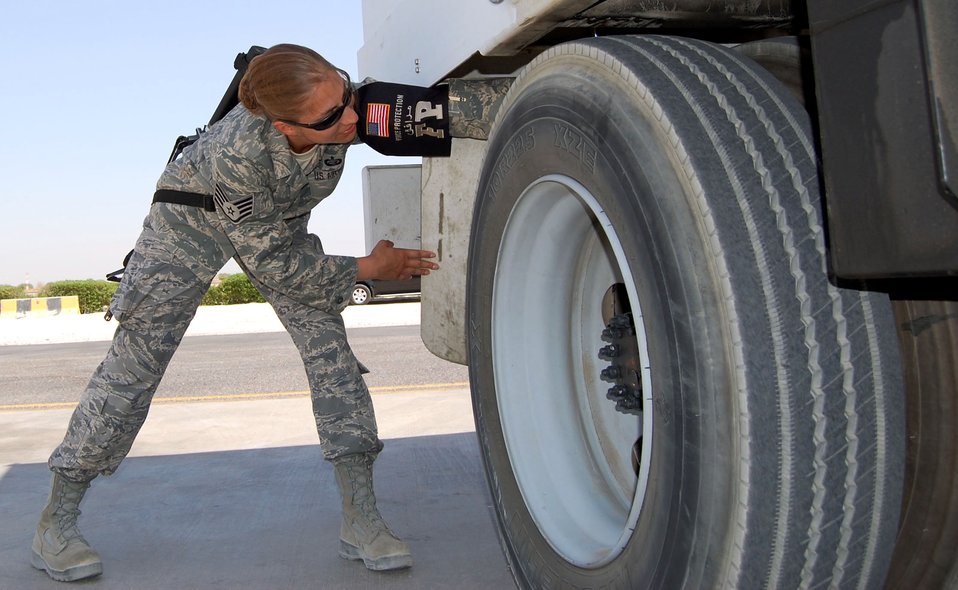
Checking things out

Staff Sgt. Amanda Sutton searches a truck for anything suspicious Sept. 25 at a forward deployed location. Sergeant Sutton is a force protection specialist from Brooks City Base, Texas.